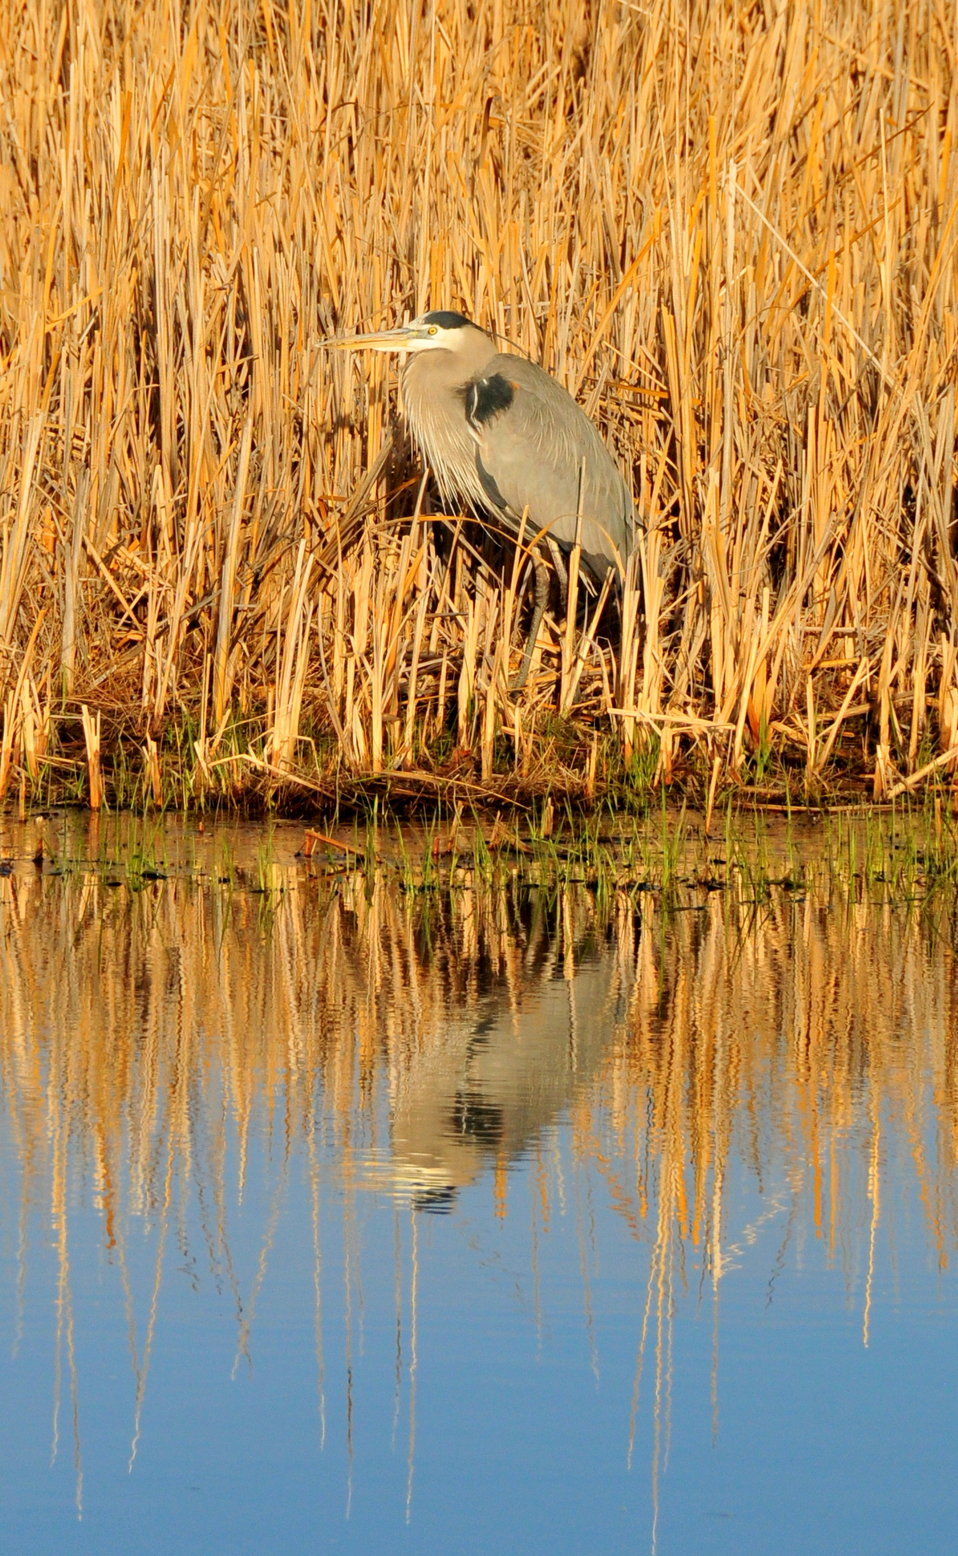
Great blue heron on Seedskadee NWR 01

A great blue heron warming in the morning sun on Seedskadee NWR.